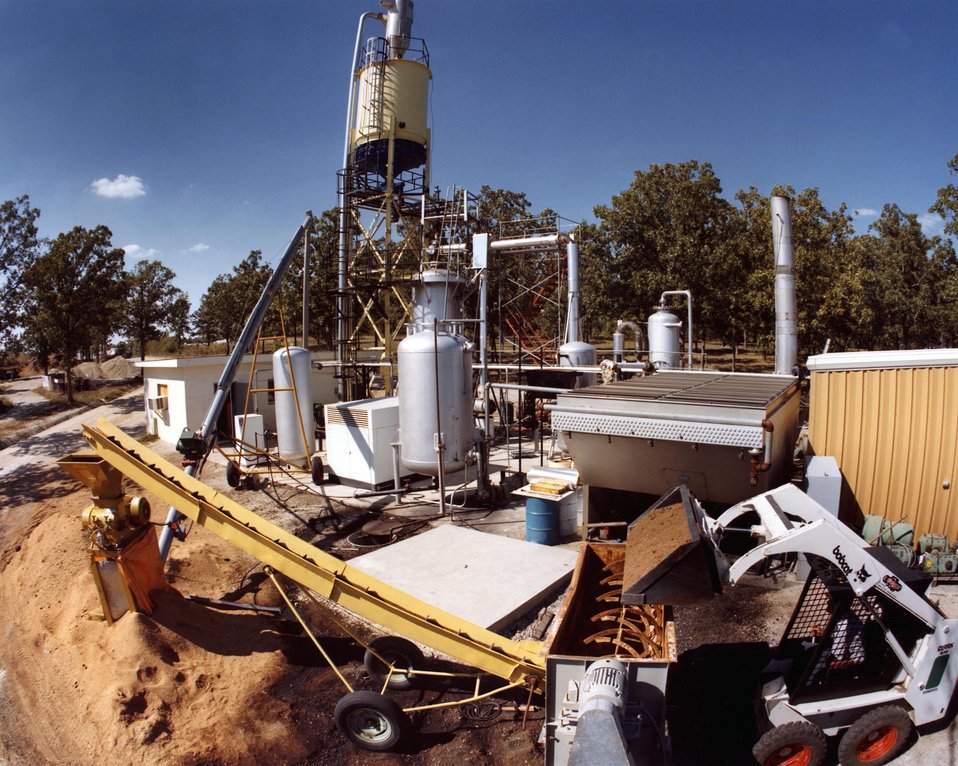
TO BEGIN THE PROCESS, SAWDUST IS LOADED ONTO THE ELEVATED VEIN AND CONVEYED TO THE BLENDER.

THE WOOD GASIFIER AT THE UNIVERSITY OF MISSOURI IS PART OF THE PROGRAM TO DEVELOP BIOMASS AS A FUEL SOURCE. WOOD CAN BE PROCESSED TO PRODUCE MEDIUM BTU GAS THAT CAN BE USED DIRECTLY OR UPGRADED INTO SUCH FUELS AS SYNTHETIC NATURAL GAS, METHANOL, AMMONIA, AND PETROCHEMICAL SUBSTITUTES. THE MAIN OBJECTIVE OF THIS PROGRAM IS TO IMPROVE CONVERSION EFFICIENCY AND PRODUCTIVITY AND REDUCE PRODUCTION COSTS OF THE GASIFICATION PROCESS. AT THE UNIVERSITY OF MISSOURI'S GASIFIER, THE SAWDUST IS BLENDED AND PLACED IN THE FEEDING IN BEFORE ENTERING THE GASIFIER.